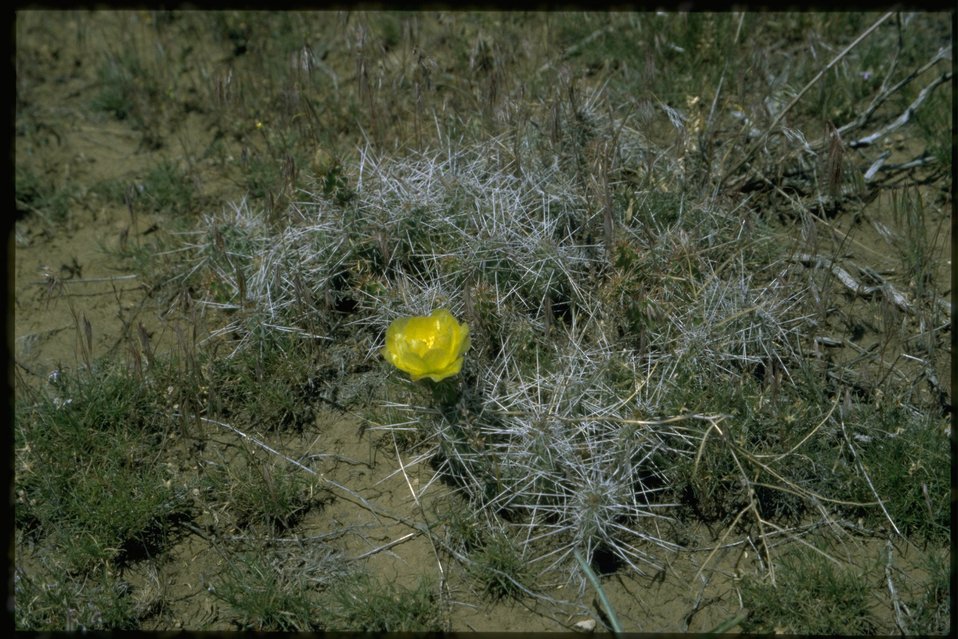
Medium shot of Opuntia.